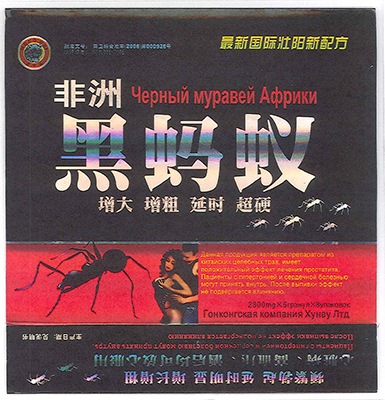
RECALLED – Dietary Supplement

April 1, 2014 – Product Recall – Nova Products, Inc. Issues Voluntary Nationwide Recall of Dietary Supplements with Undeclared Active Pharmaceutical Ingredients.